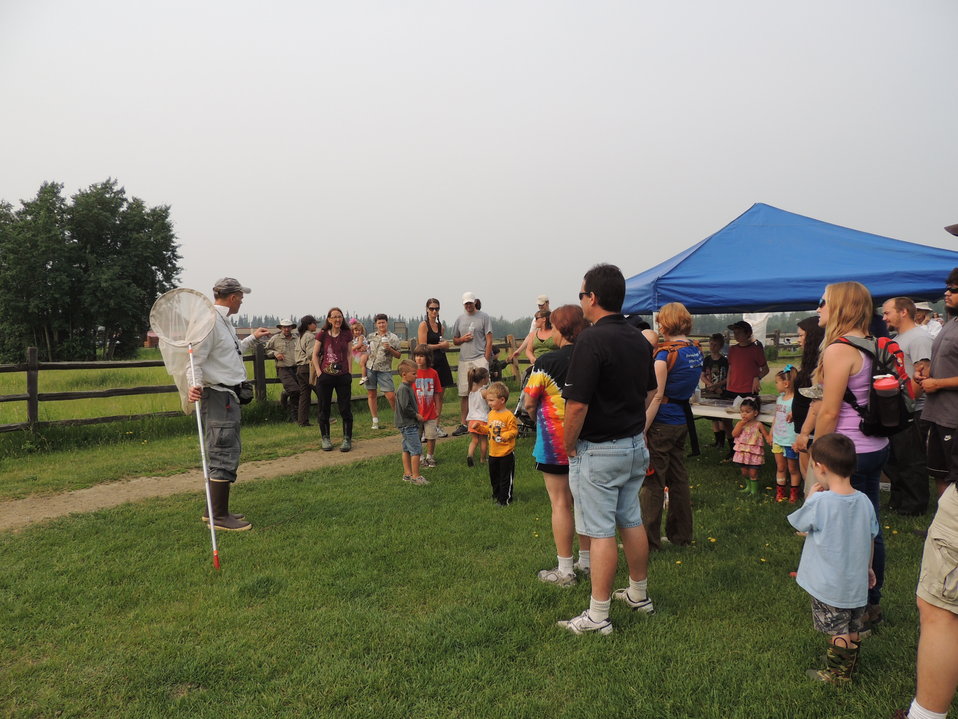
Dragonfly Day 2013

(USFWS)